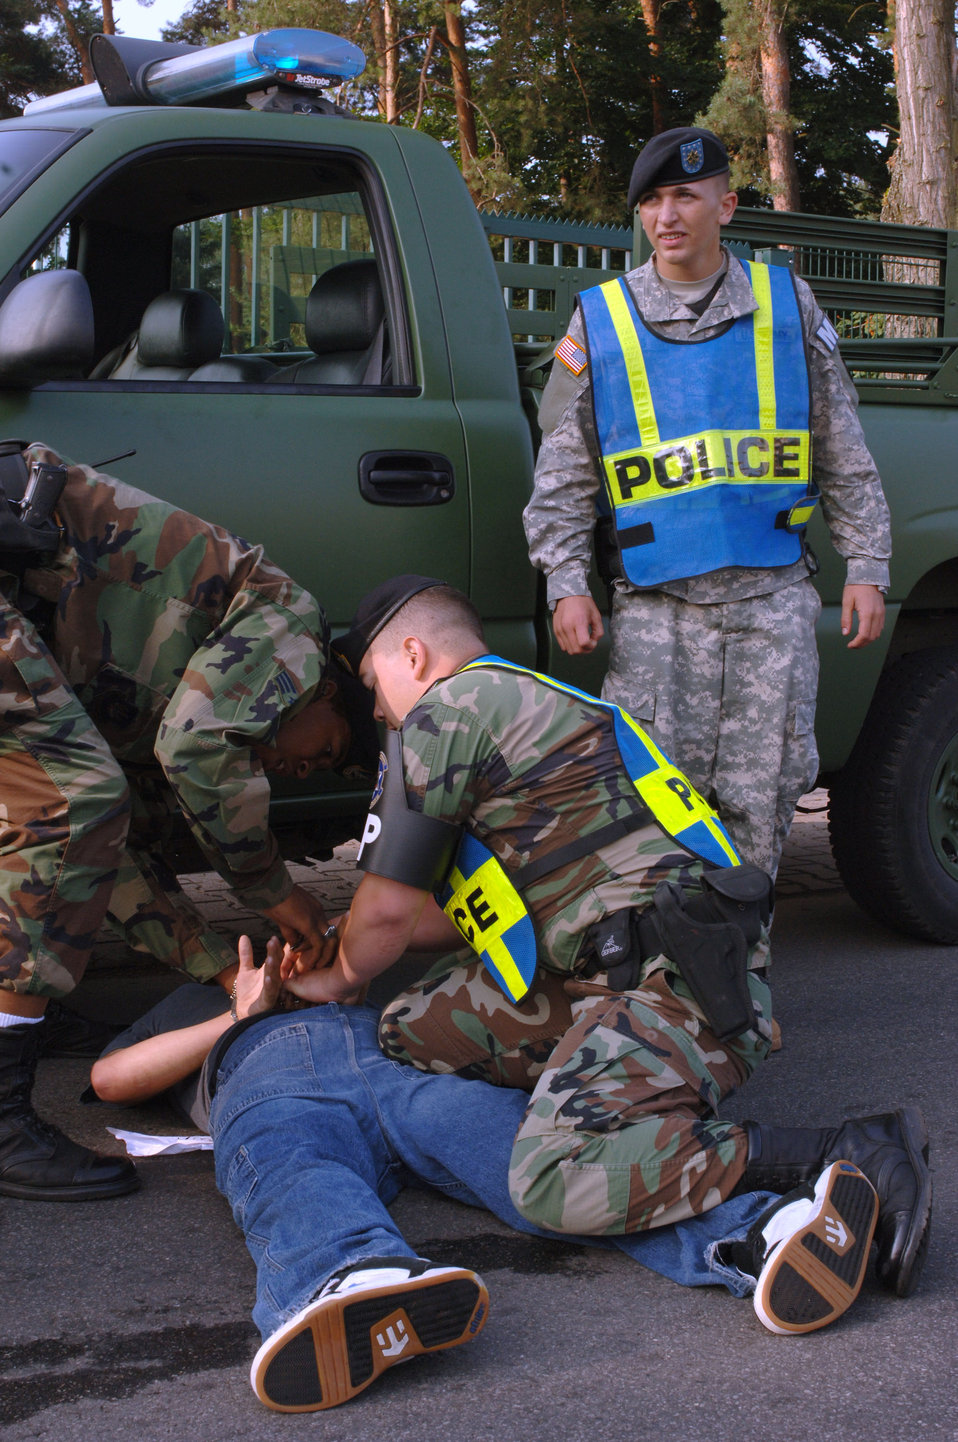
Confrontation management exercise

Airman 1st Class Michael Ortiz is cuffed on the ground by Senior Airman Xavier Drake, Airman First Class Joshua Mireles and Pvt. 2nd Class Ronald Ellis during a confrontation managment exercise at Vogelweh Air Station, Germany, on Aug. 4. They are all assigned to the 569th U.S. Forces Police Squadron.